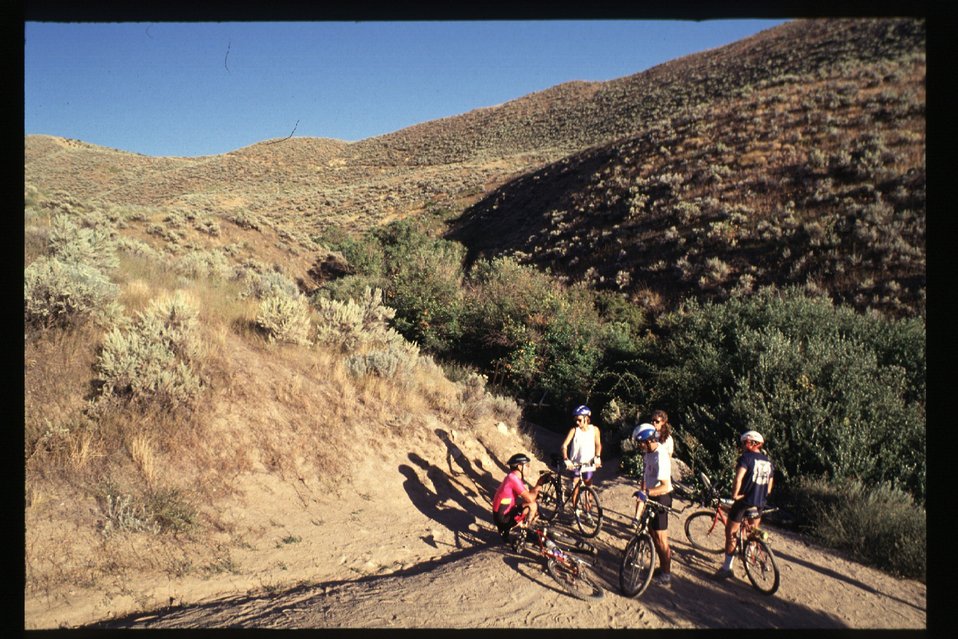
Bikers on Boise Foothills Boise Front bicyclists Four Rivers Field Office LSRD Lower Snake River District